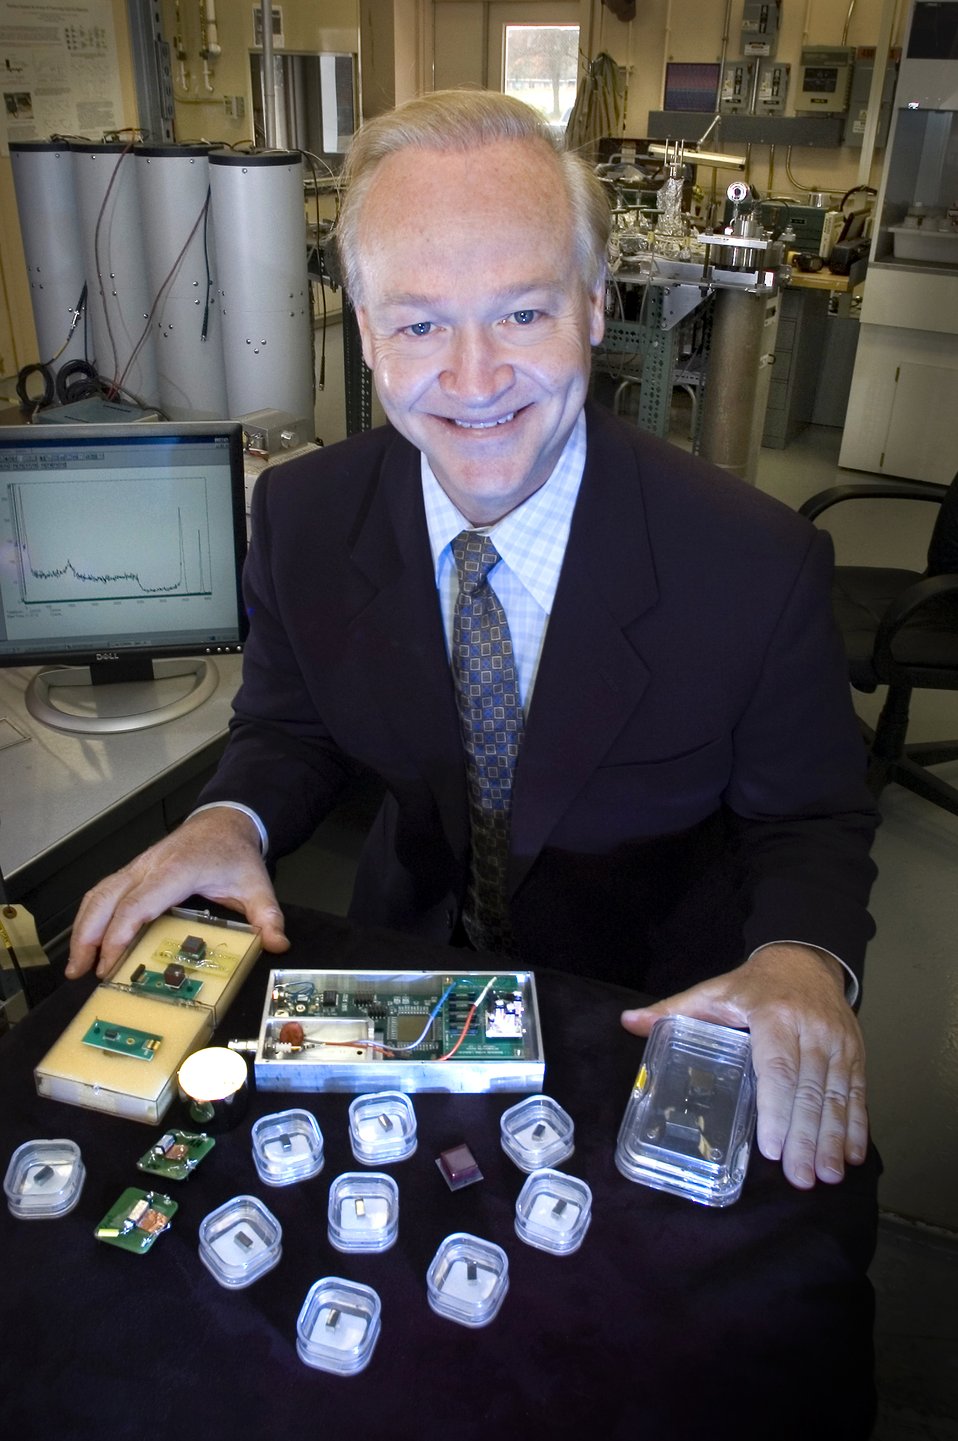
BNL scientist Ralph James was recognized for exceptional technical accomplishments and leadership leading to advances in nonlinear optics and optoelectronic sensors for laser, spectroscopy and imaging.
Ralph James studies how the properties of semiconductors change when exposed to intense laser pulses. His date are used to make infrared lasers work effectively for a wide variety of applications, from medical to military. The research involves the use of high-intensity laser pulses to thermally process semiconductor crystals for producing solar cells. James also developed a new class, solid-state radiation detectors that can efficiently detect both x-rays and gamma rays at room temperature. Also they identify specific isotopes responsible for the radiation. There are a variety of applications including medical imaging, nuclear nonproliferation, environmental monitoring, and nuclear and space sciences.